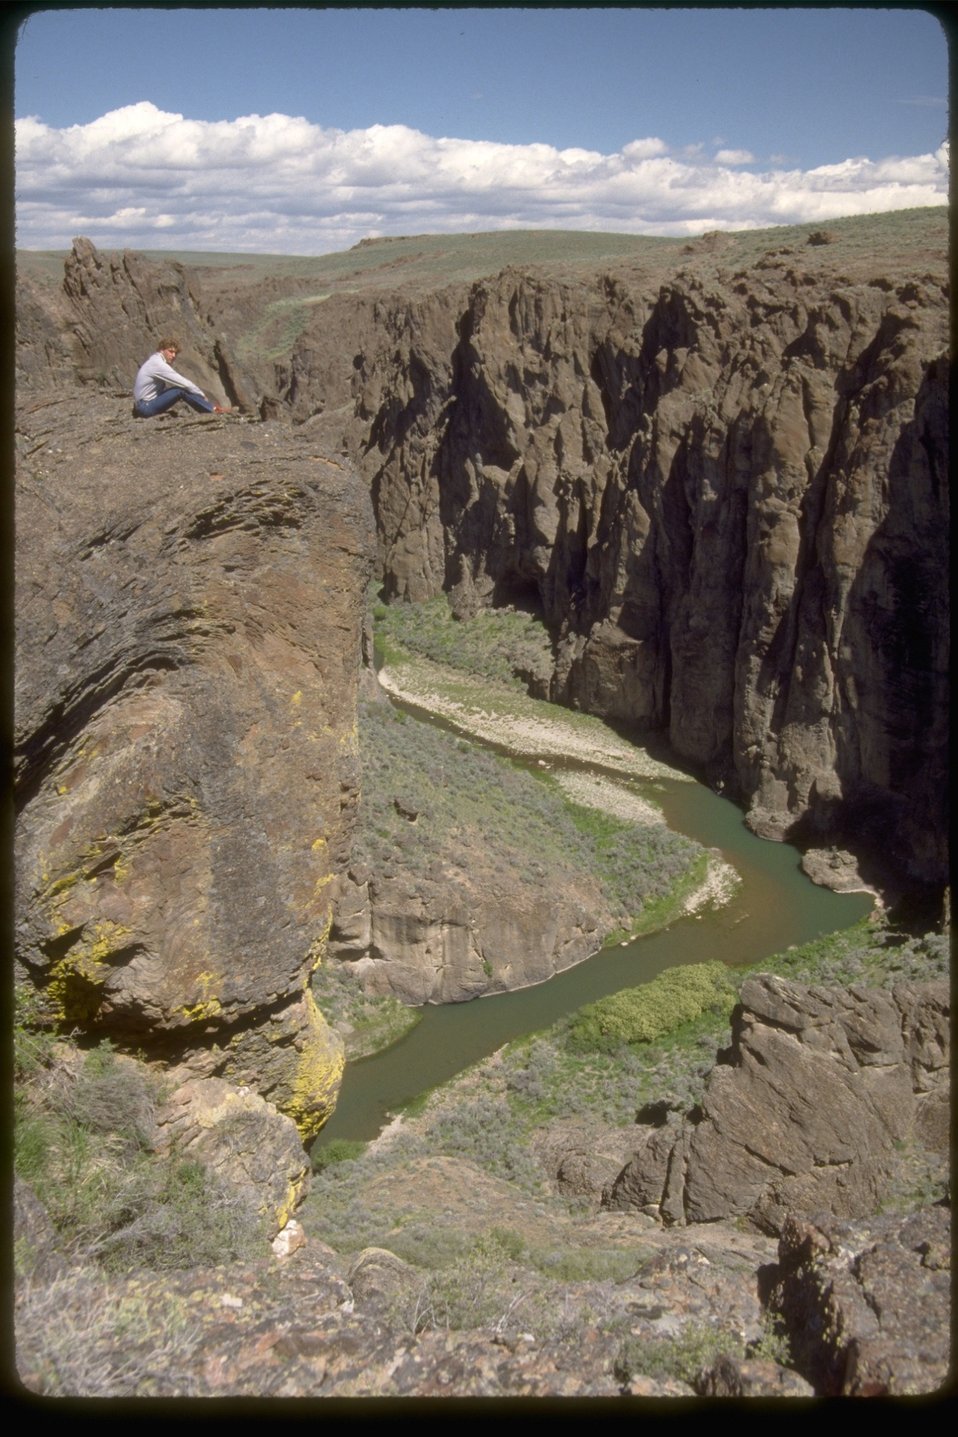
Upper West Little Owyhee from rim with a person sight seeing from the rim. OR 3-173